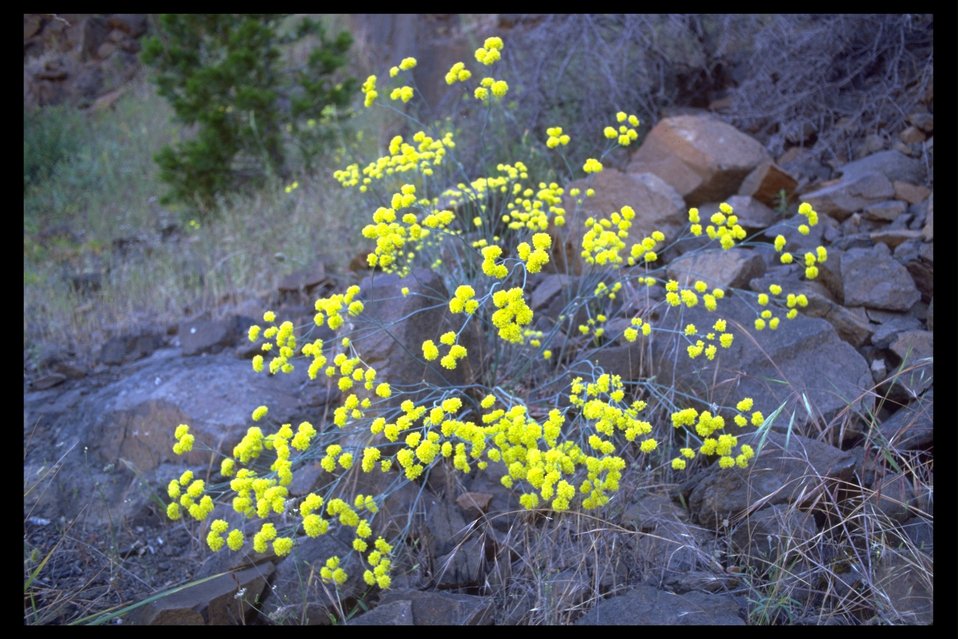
Naked Eriogonum (Eriogonum nudum) along Highway 227 a few miles east of Trail, OR.